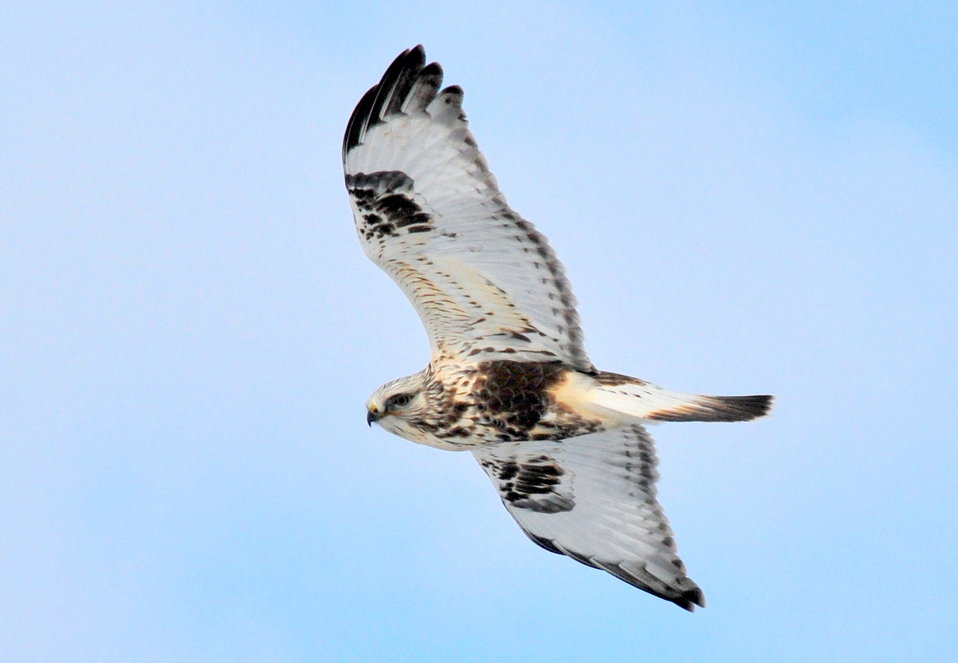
Rough-legged Hawk Soaring

A rough legged hawk soars over Seedskadee NWR, looking for its next meal.